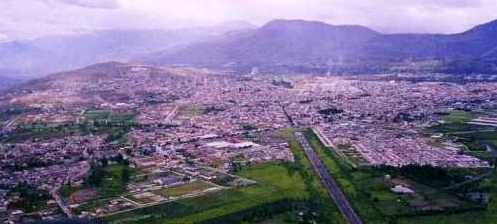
Ibarra, from paraglider flight from volcano Imbabura